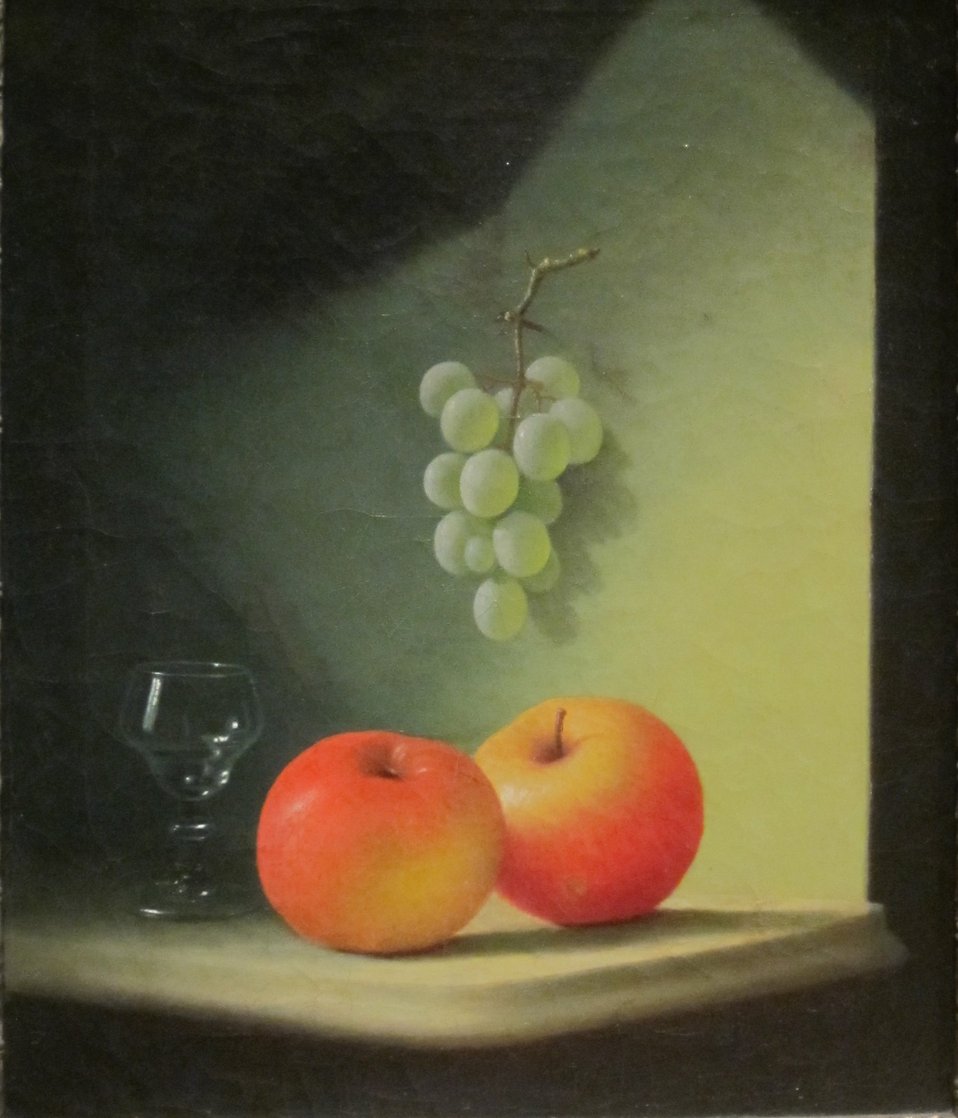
'Still-life with Apples and Grapes' Edward Edmondson, Jr., Dayton Art Institute